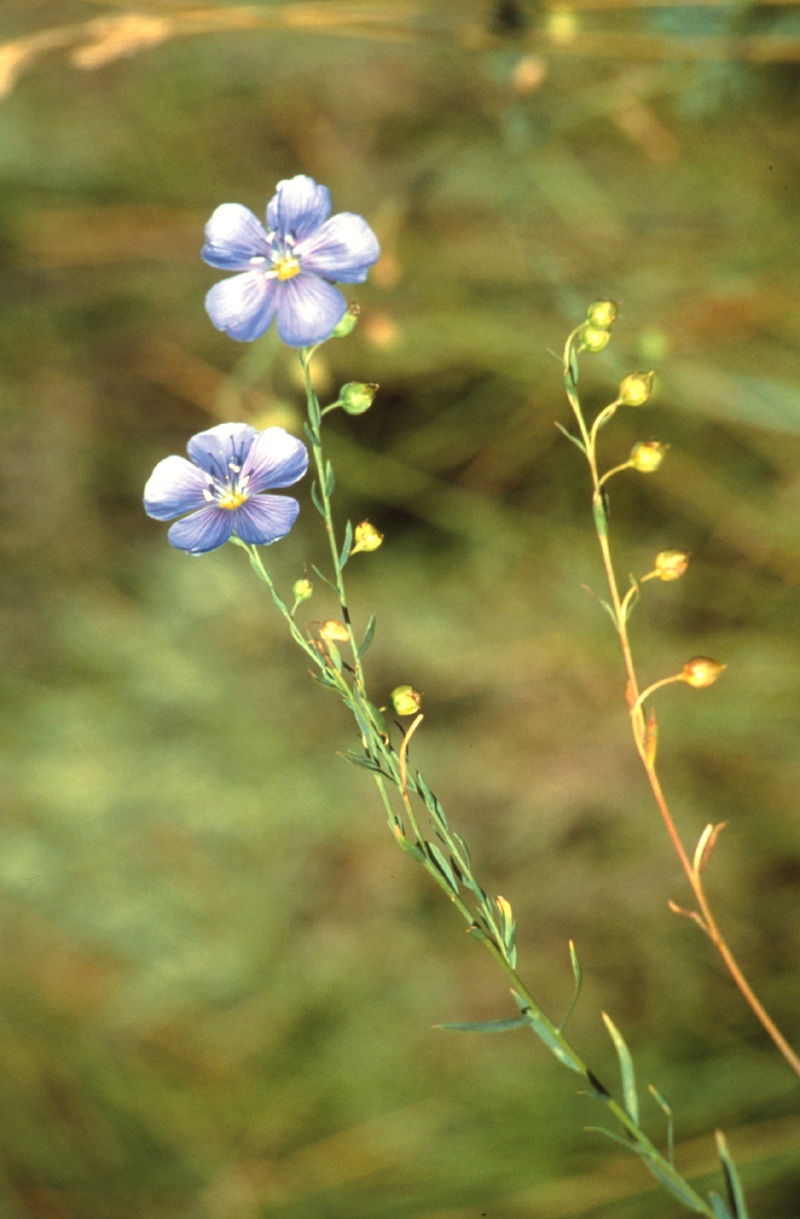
South Fork of the Snake River